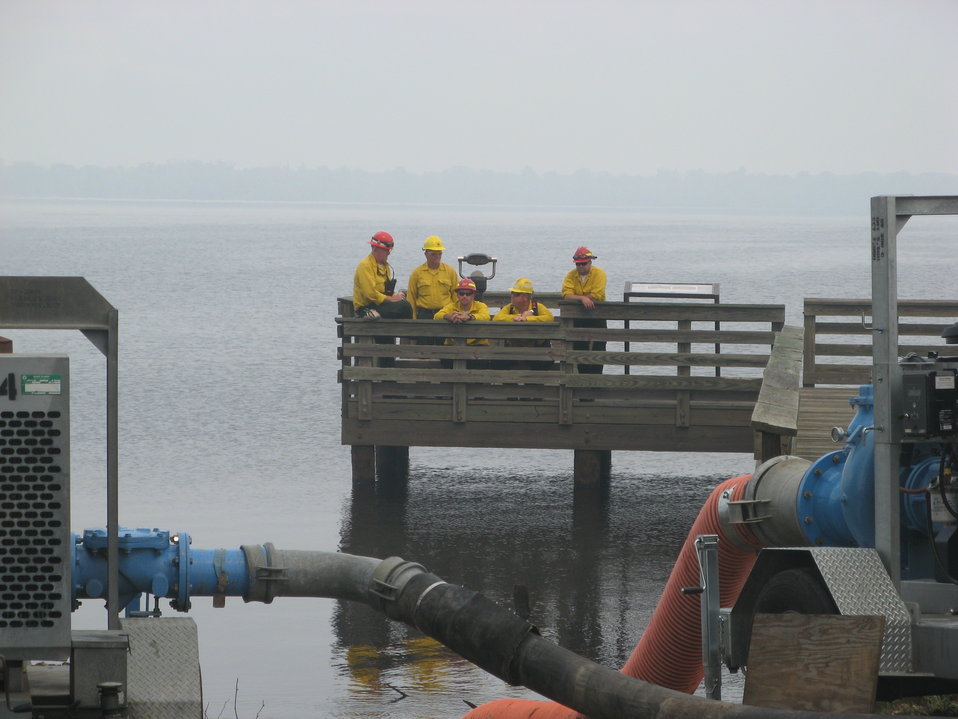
Firefighters on Lake Drummond

Suffolk, VA, August 2011: Firefighters working the Lateral West Fire take a break on a boardwalk over Lake Drummond on Great Dismal Swamp National Wildlife Refuge.